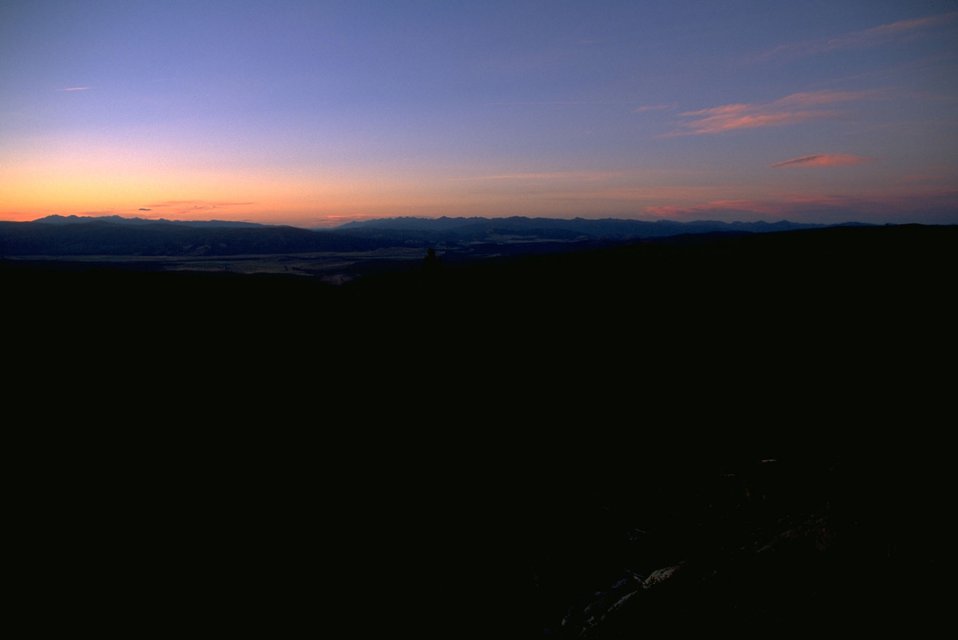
Garnet Back Country Byway--sunrise view from overlook